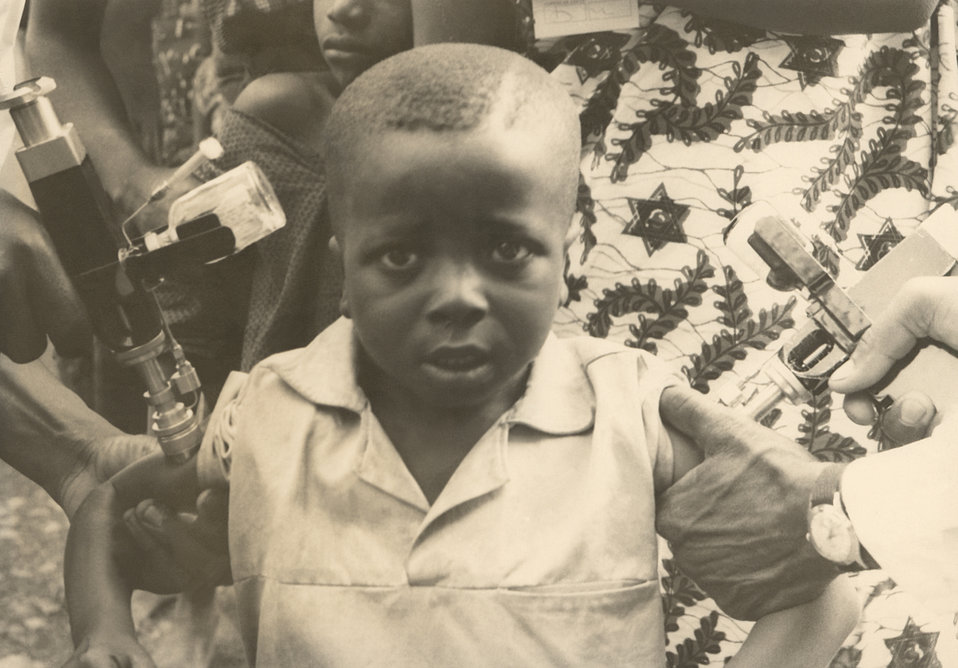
This 1968 image depicts a young West African Cameroonian boy in the process of receiving his vaccinations during the African Smallpox Eradication and Measles Control Programs. The public health technicians were administering the requisite vaccines using a 'Ped-O-Jet' jet injector applied to either of the boy's upper arms.